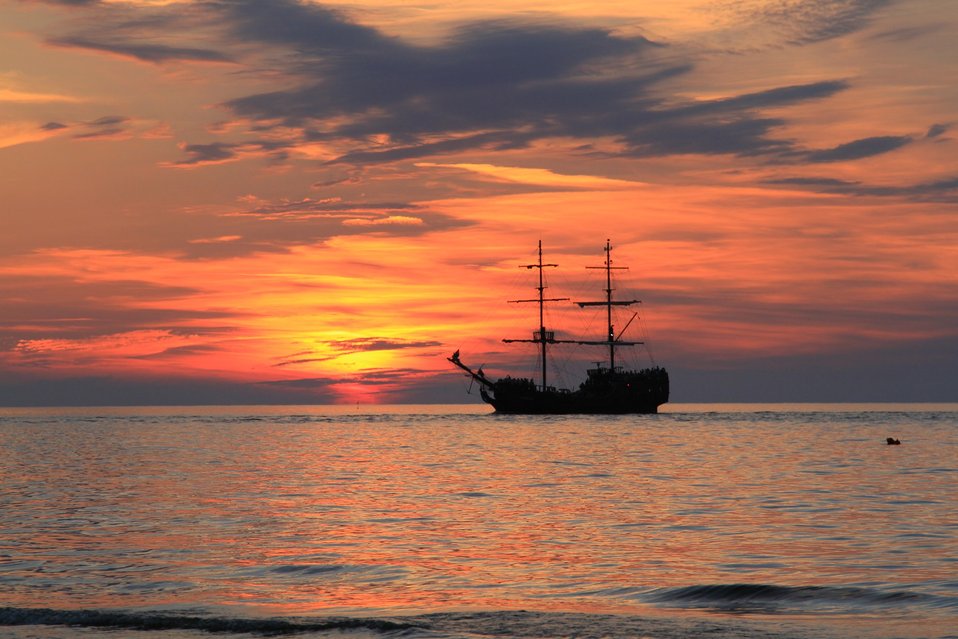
Sunset in leba.